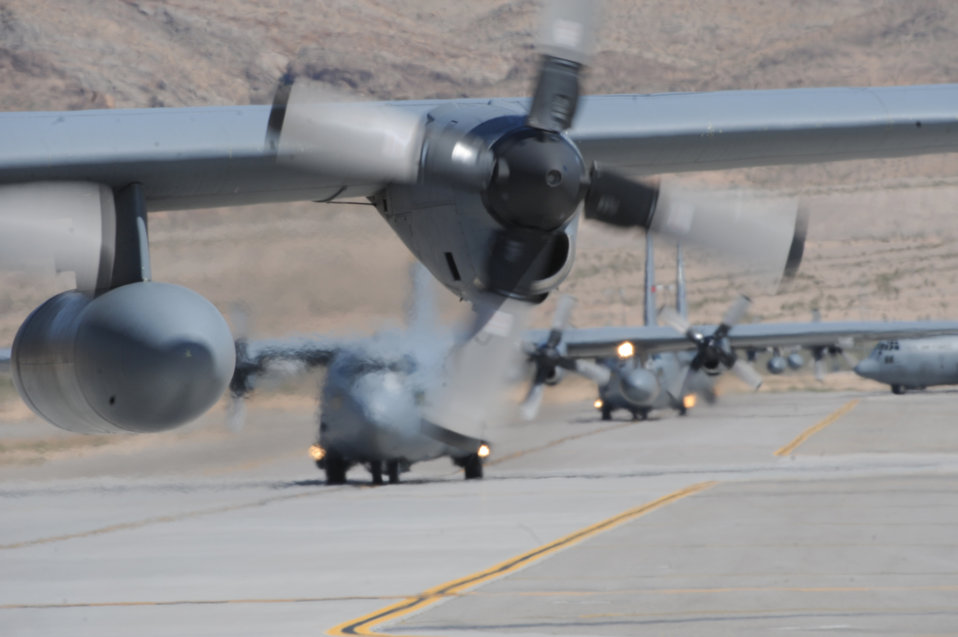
Mobility exercise

Several C-130 Hercules taxi May 18, 2011, after an exercise at Nellis Air Force Base, Nev.